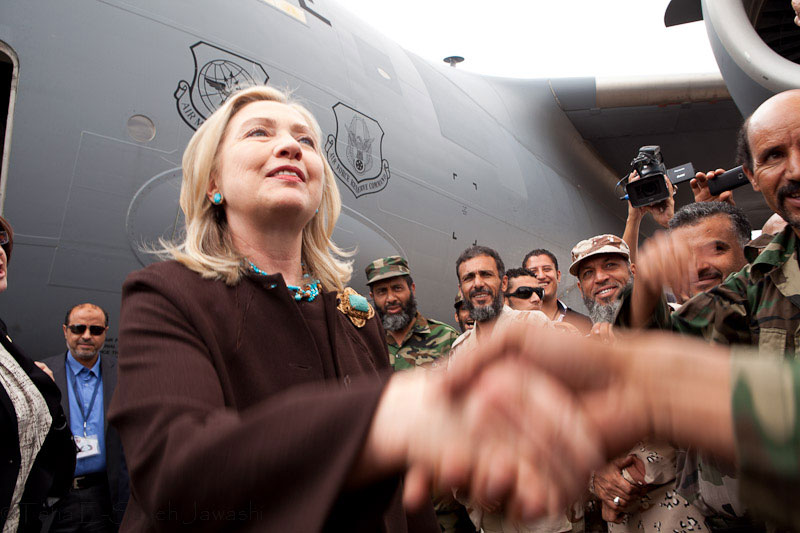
Secretary Clinton Arrives in Tripoli

U.S. Secretary of State Hillary Rodham Clinton arrives on the tarmac in Tripoli, Libya, on October 18, 2011.